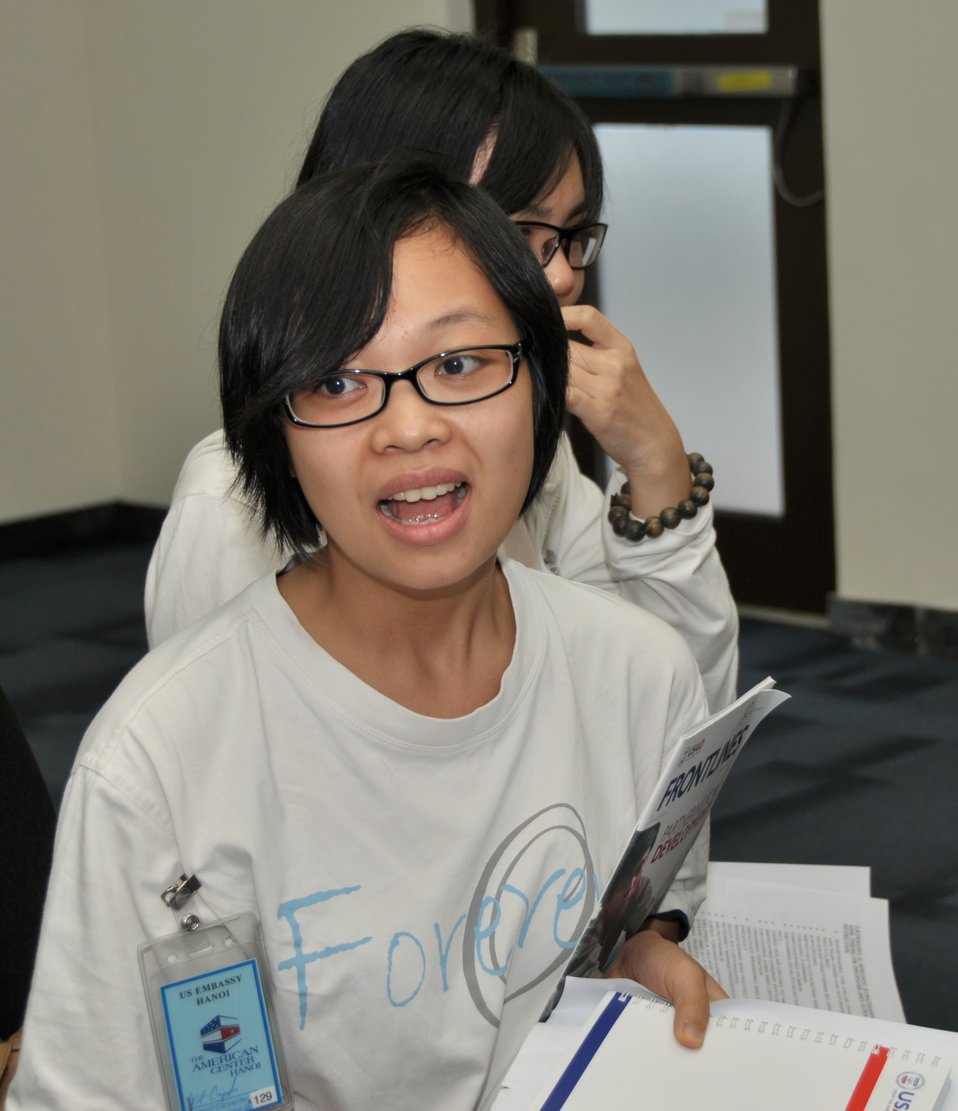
Vietnamese university students join the Business Plan Mashup exercise

Photo: @USAIDVietnam, November 16, 2012